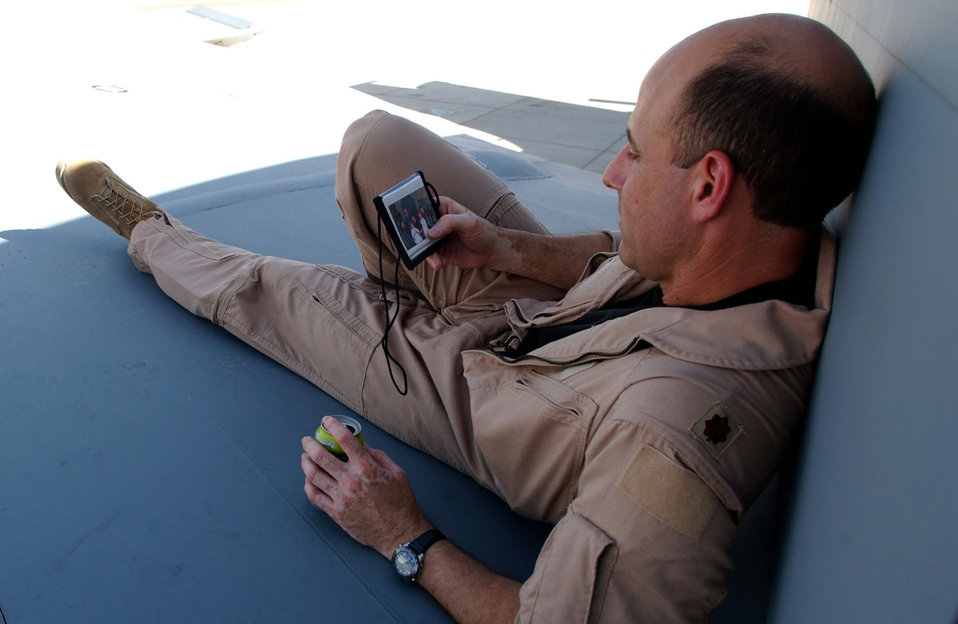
Thoughts of home...

OPERATION IRAQI FREEDOM -- Due to the extremely high temperature inside the aircraft, Maj. Louis Cortes, KC-135 pilot, from the 931st Air Refueling Group, McConnell Air Force Base, Kan., sits on the aircraft wing as he looks at a photo of his wife of 12 years and his four young children which he carries with him at all times. Maj. Cortes is assigned to the 405th Air Expeditionary Wing, forward deployed location, Southwest Asia in support of Operations Enduring Freedom and Iraqi Freedom.